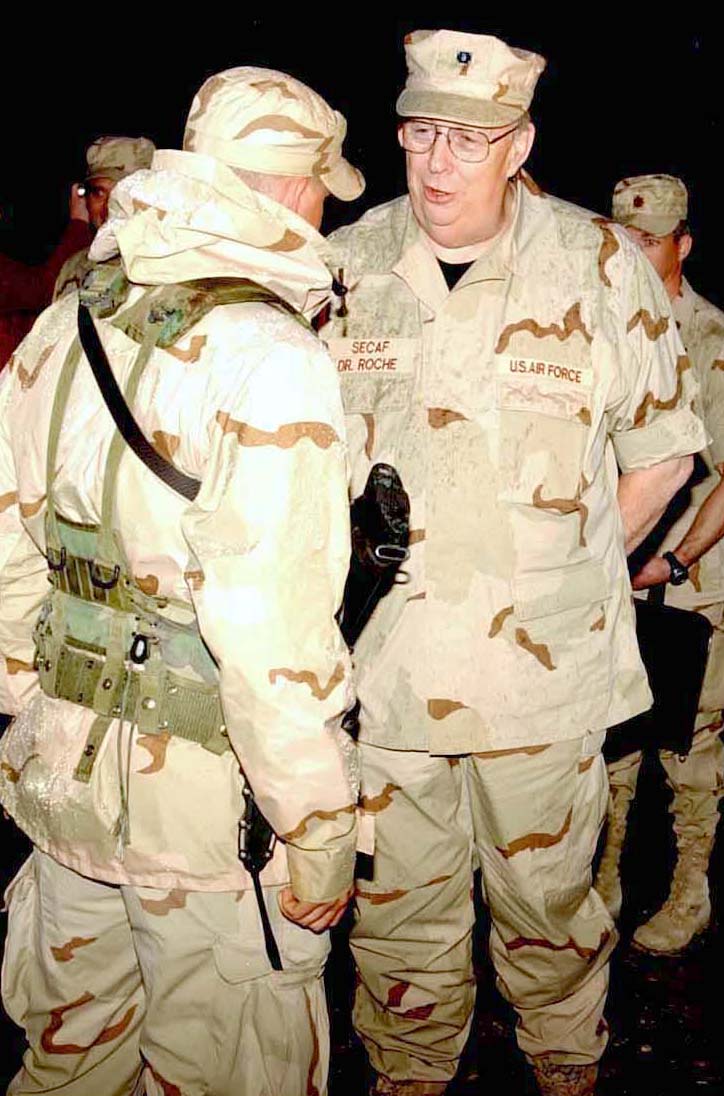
Roche visits Bagram

BAGRAM AIR BASE, Afghanistan -- Secretary of the Air Force Dr. James G. Roche pauses at the gate to Camp Cunningham, where he received a briefing from Airman 1st Class Donald Wilburn. Secretary Roche met with the men and women of the 455th Expeditionary Operations Group during his visit here April 16. Airman Wilburn is assigned to the 455th Expeditionary Security Forces Squadron.